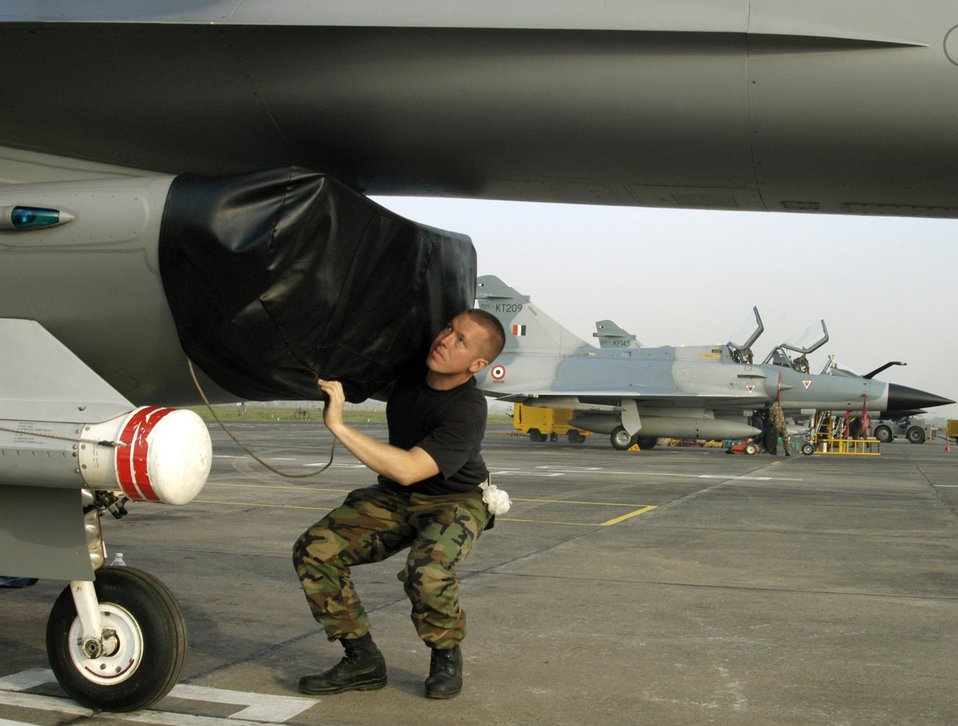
Cope India 06

KALAIKUNDA AIR STATION, India -- Crew chief Staff Sgt. Garrett Faust removes the intake cover from his the F-16 Fighting Falcon here. The Falcons are flying dissimilar air combat sorties against Indian Mirage fighters -- like in the background -- and other aircraft during exercise Cope India 06, which ends Nov. 19. The sergeant is from the 35th Aircraft Maintenance Squadron at Misawa Air Base, Japan.